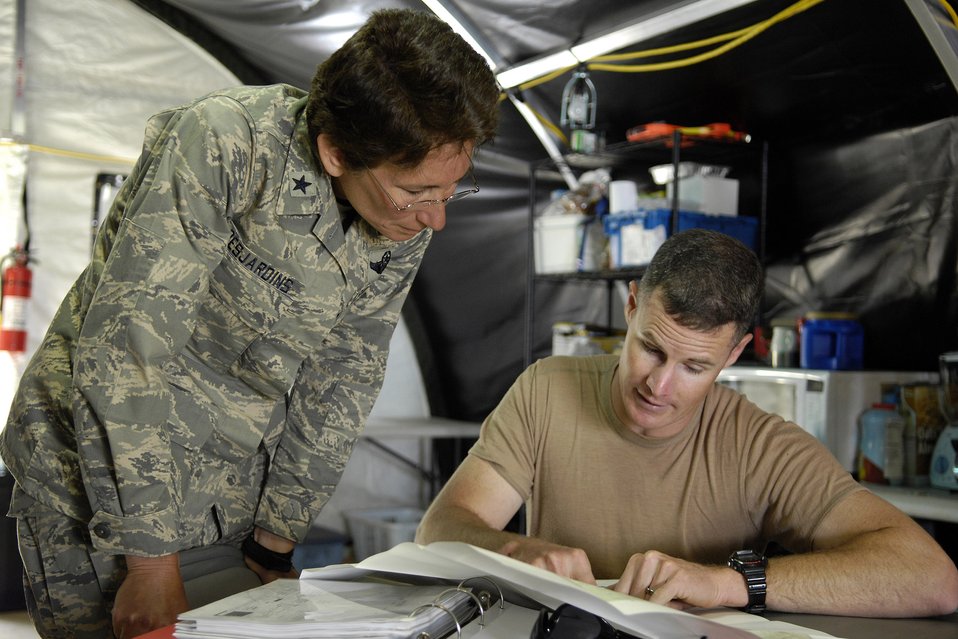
Cadets train in survival, evasion, resistance, escape

Tech. Sgt. Jarod Savage briefs Brig. Gen. Susan Y. Desjardins on tactics, techniques and procedures during her visit June 9 to the Combat Survival Training held at Saylor Park in Colo. Six hundred and sixty cadets will be trained as instructors in survival, evasion, resistance and escape during the 2008 summer period. Sergeant Savage is the 22nd Training Squadron NCO in charge of Evasion Training at the Air Force Academy. General Desjardins is the Air Force Academy commandant of cadets.